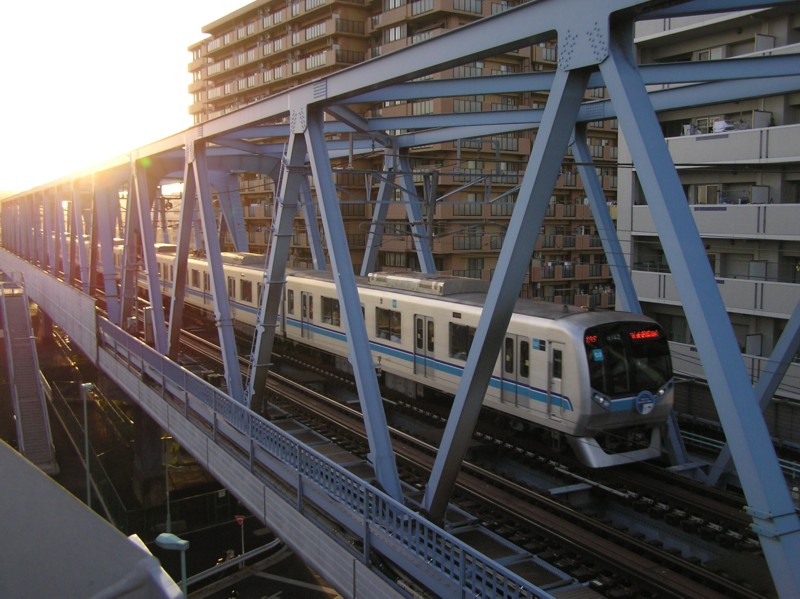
日本語: 05/5/3投稿者撮影 撮影場所 南砂町―西葛西 05-142F 東京メトロ1周年記念ヘッドマーク付 Category:鉄道列車画像 Category:東京地下鉄の画像